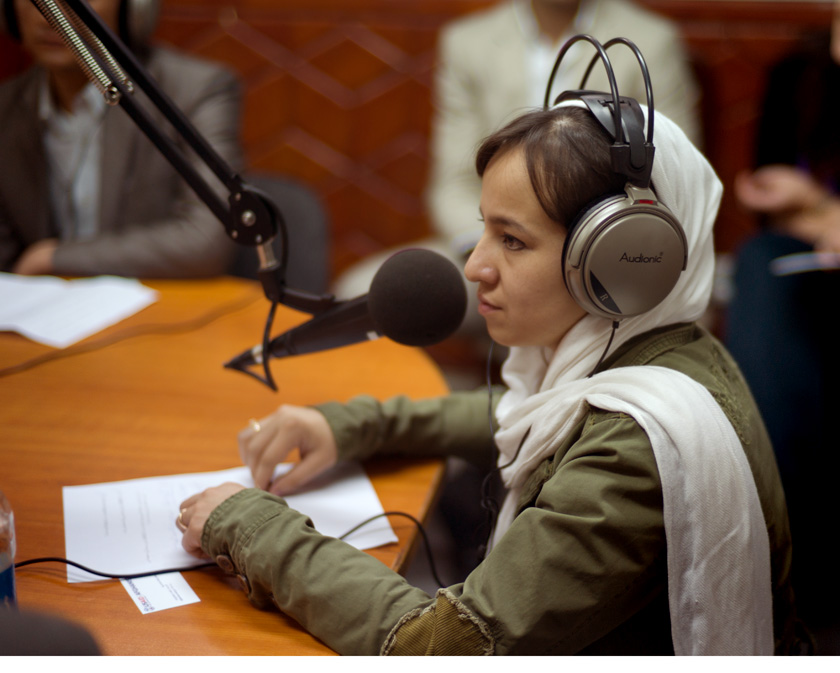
Female Student